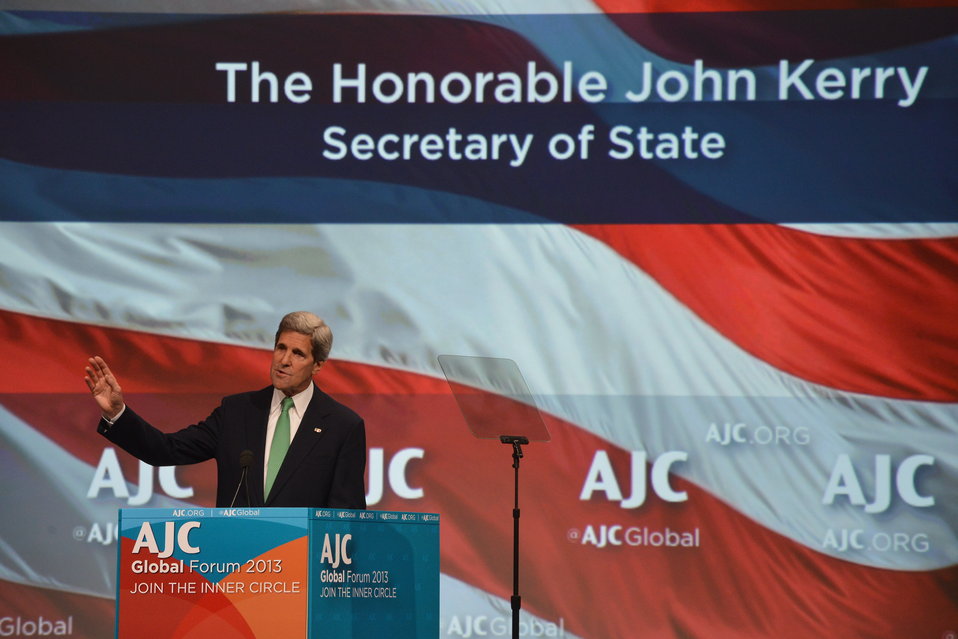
Secretary Kerry Delivers Remarks at the American Jewish Community Global Forum

U.S. Secretary of State John Kerry delivers remarks at the American Jewish Community Global Forum in Washington, D,C., on June 3, 2013.